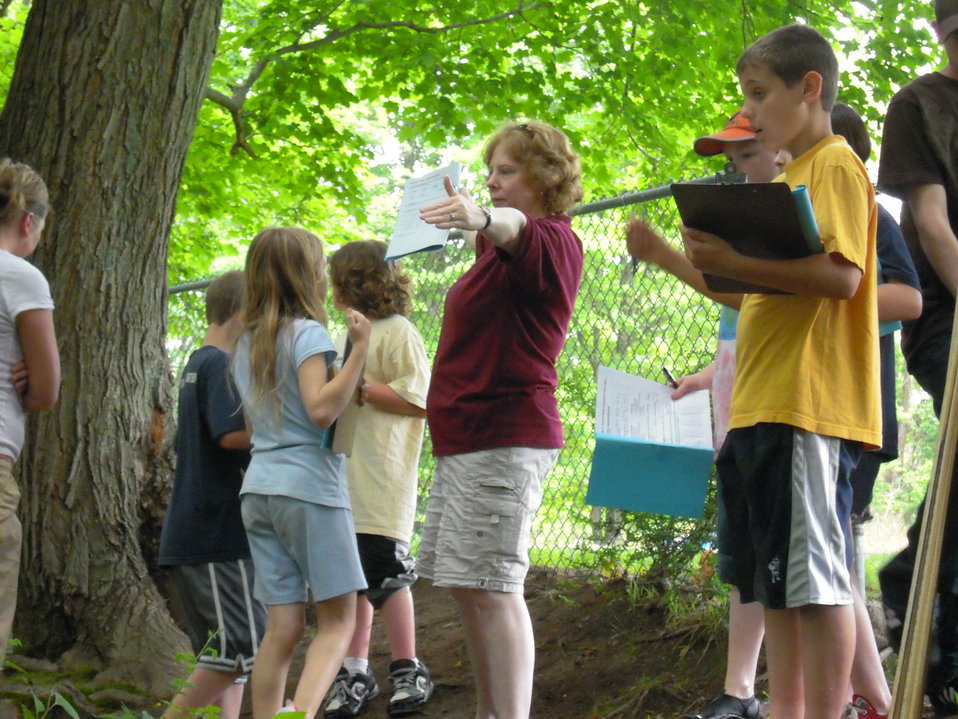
Lecours with stream studies group